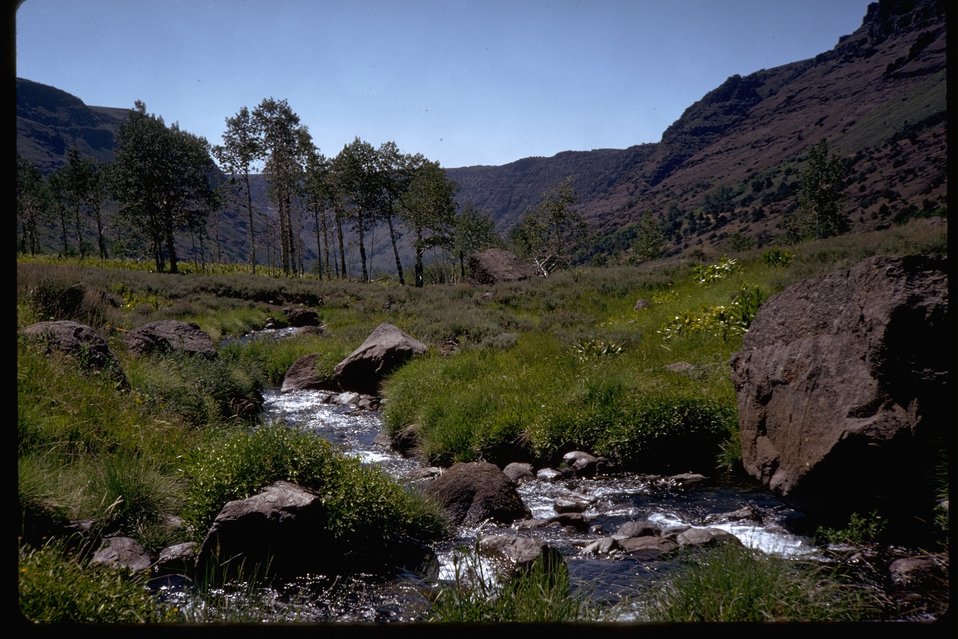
Big Indian Creek at the base of Big Indian Gorge.